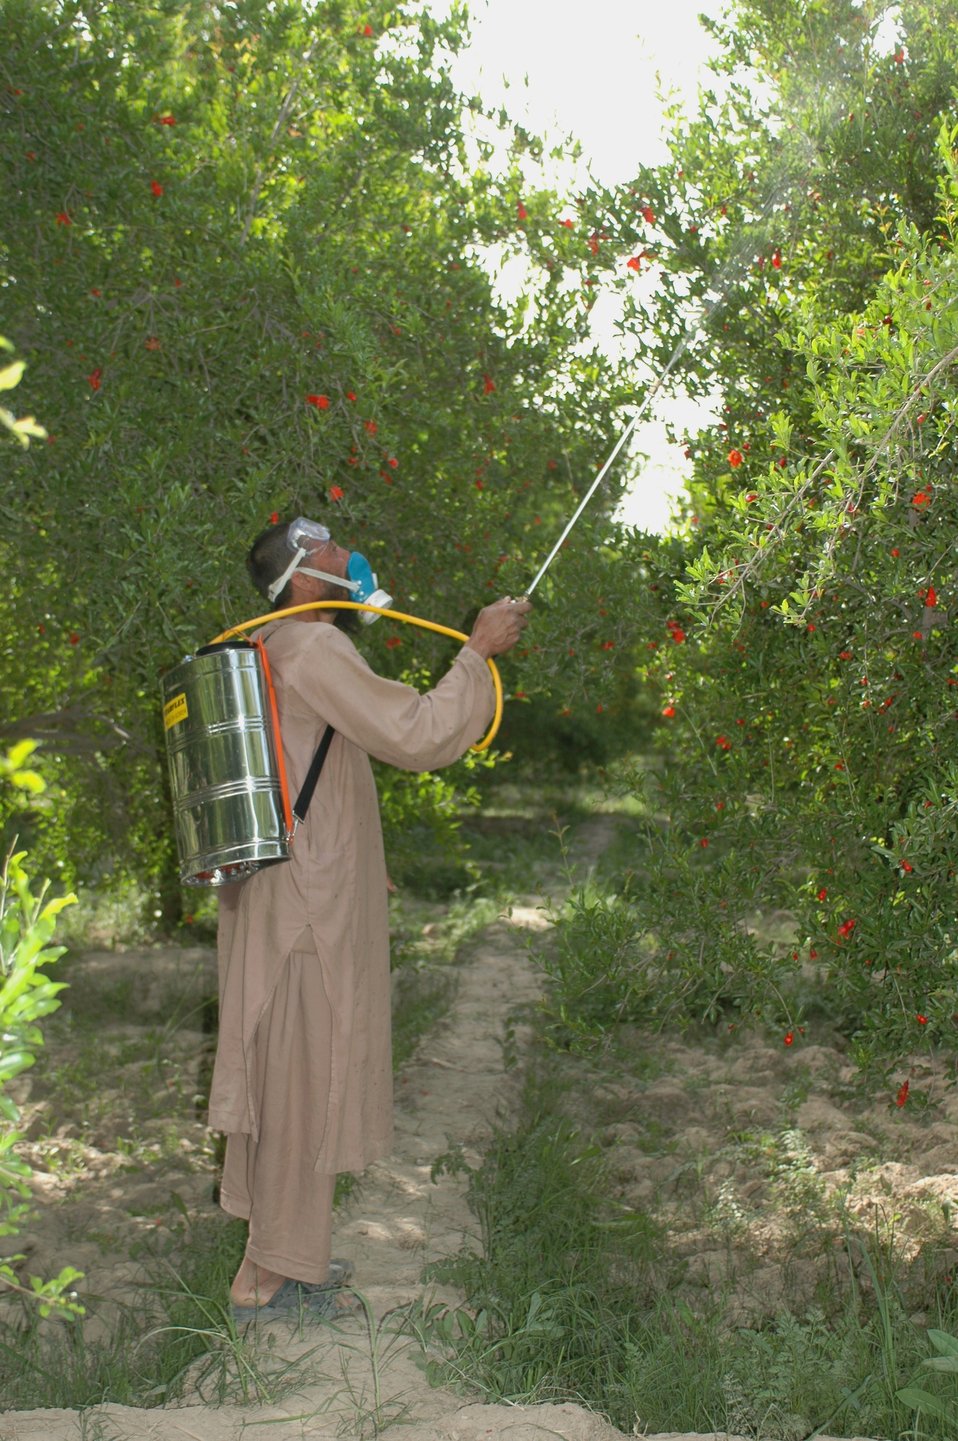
Dr Shah Visits Argandab April 10, 2010